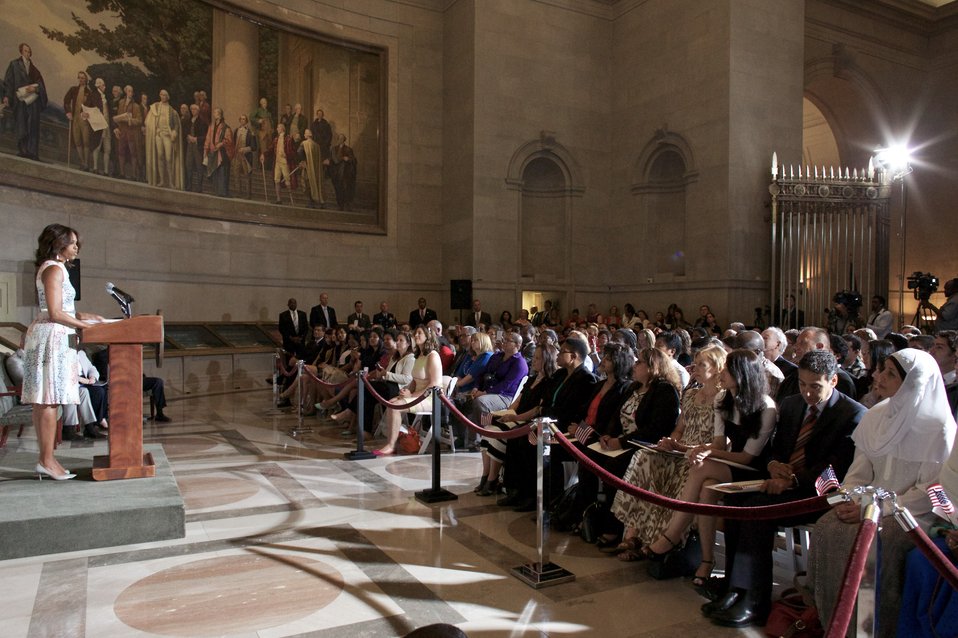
Naturalization Ceremony with Michelle Obama